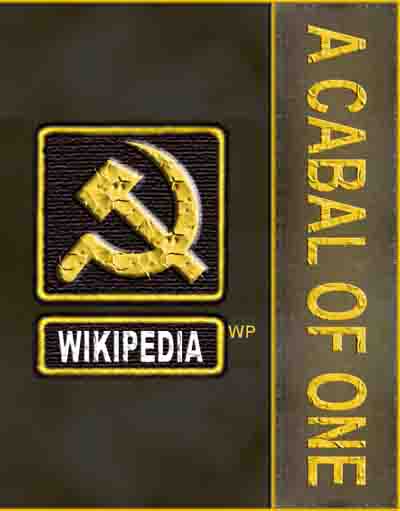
Cabal of One